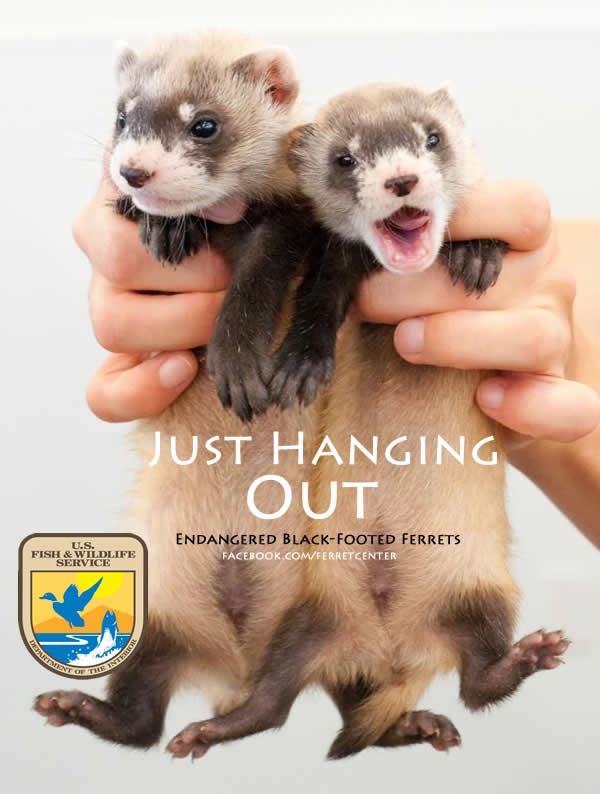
Just Hanging Out

Two endangered black-footed ferrets at the National Black-footed Ferret Conservation Center.